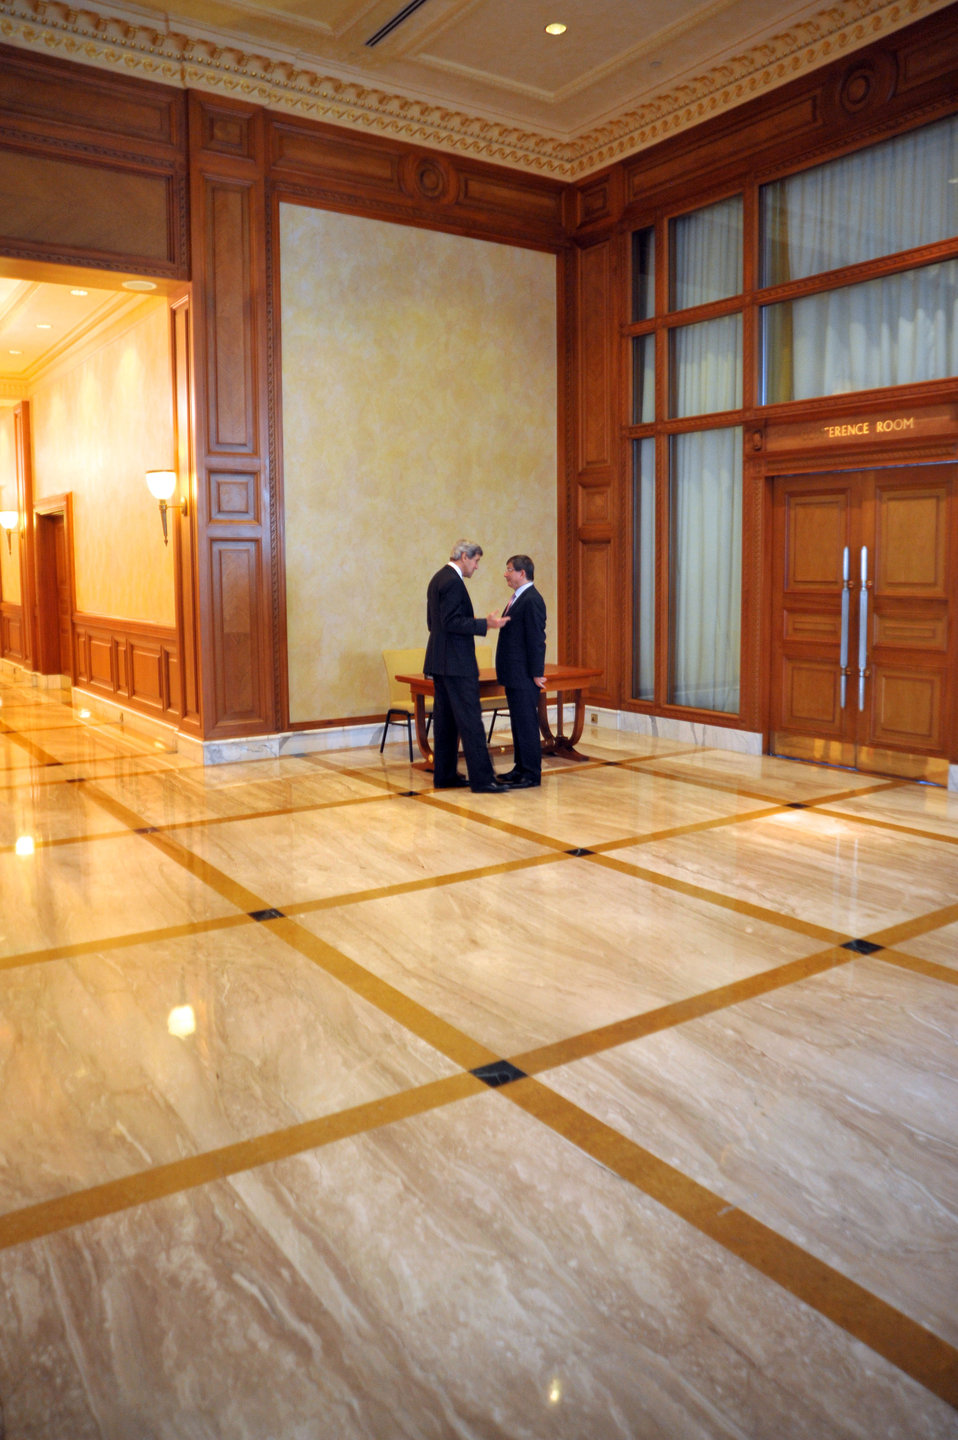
Secretary Kerry Chats With Turkish Foreign Minister Davutoglu

U.S. Secretary of State John Kerry and Turkish Foreign Minister Amhet Davutoglu share a private moment after a bilateral discussion in Bandar Seri Begawan, Brunei, on July 2, 2013.